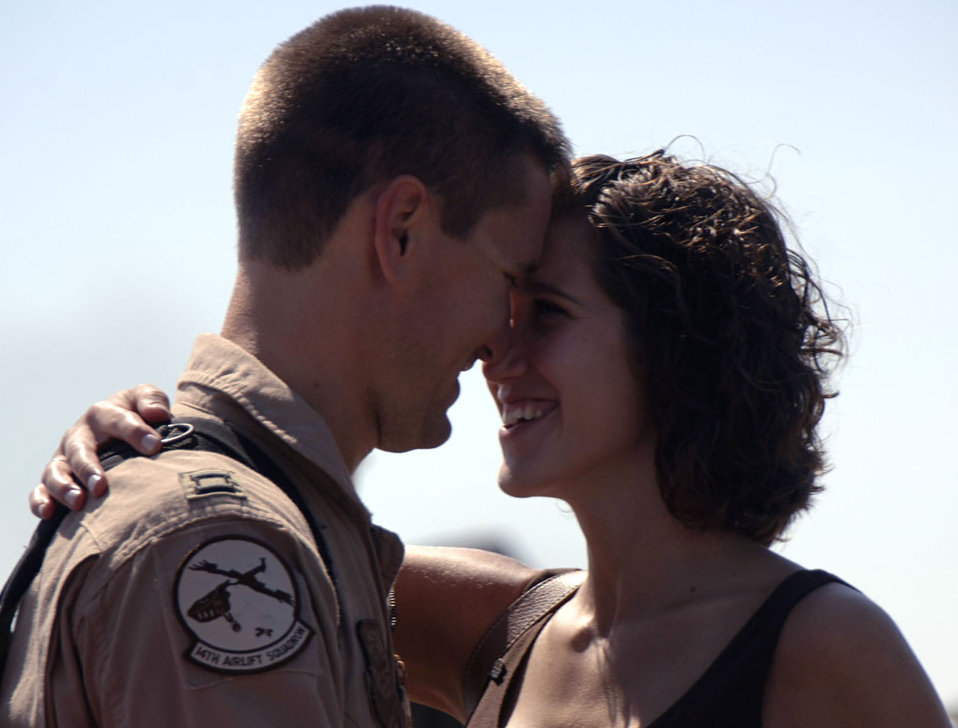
Charleston Airmen welcome home warriors

Capt. Brian Thomasson embraces his wife, Amanda, after arriving home Sept. 3 at Charleston Air Force Base, S.C. Captain Thomasson and other 14th Airlift Squadron Airmen returned after a four-month deployment to Southwest Asia.